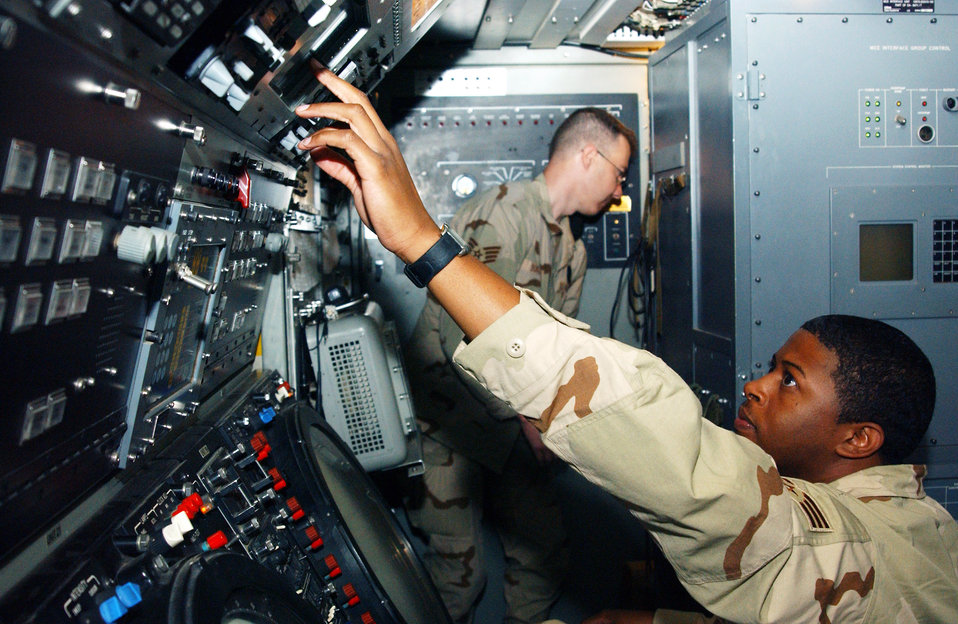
Maintainers keep Balad radar running 'round the clock

During a night-shift maintenance inspection June 9, Senior Airman Gerald Fuller (front) and Staff Sgt. Christopher Sokaski (back) check all settings on the radar system at Balad Air Base, Iraq. Airman Fuller and Sergeant Sokaski are 727th Expeditionary Air Control Squadron ground radar maintenance technicians, both deployed from Hill AFB, Utah.